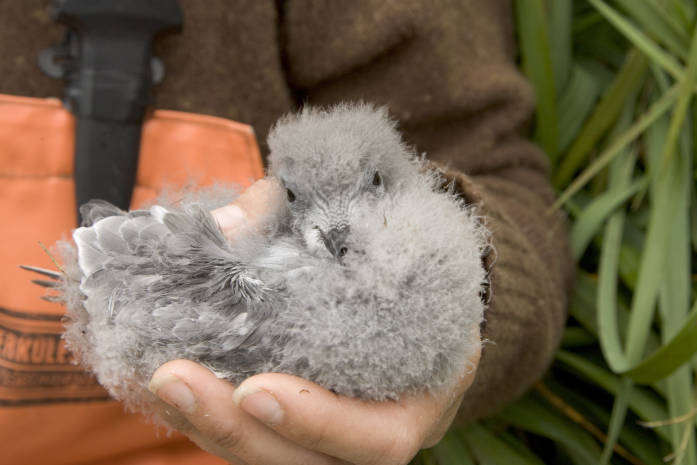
fork-tailed storm petrel chick

Alaska Maritime National Wildlife Refuge